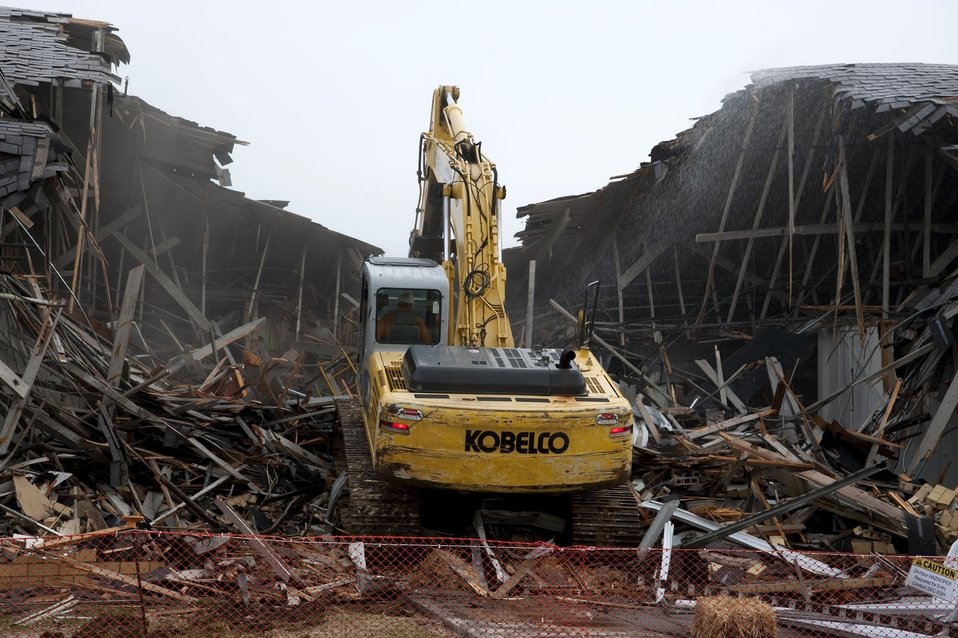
Y-12 Engineering Row Demolition

At ORNL, demolition work is changing the landscape of the site and clearing the way for future development.